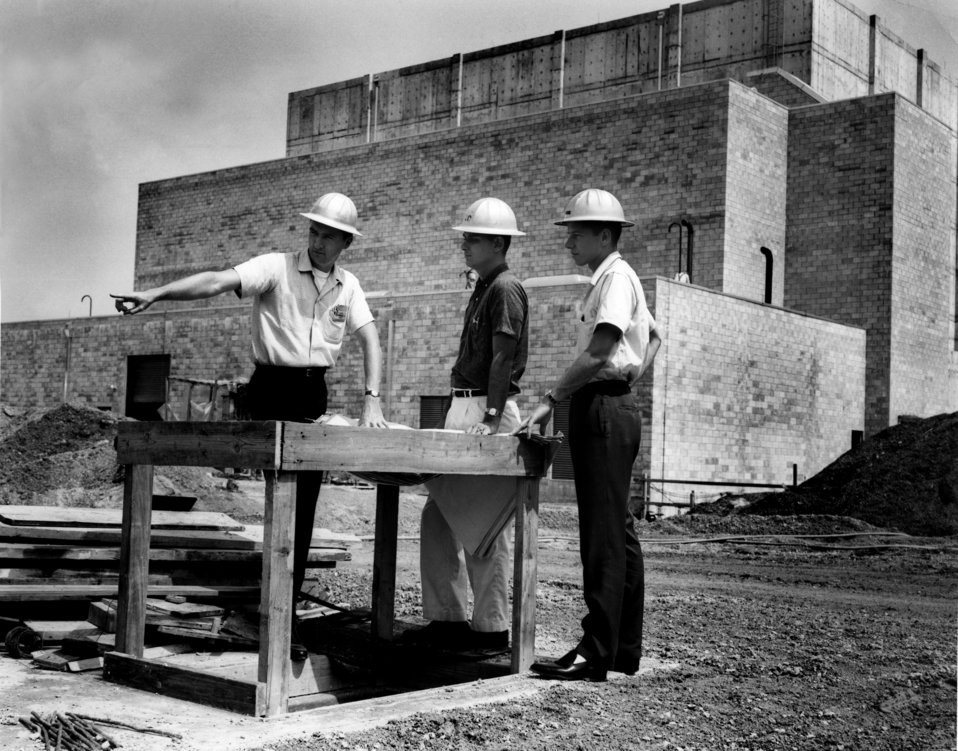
Work at HFIR Oak Ridge

ORO-63-842 DOE photo Ed Westcott 7-30-1963 Oak Ridge Tennessee